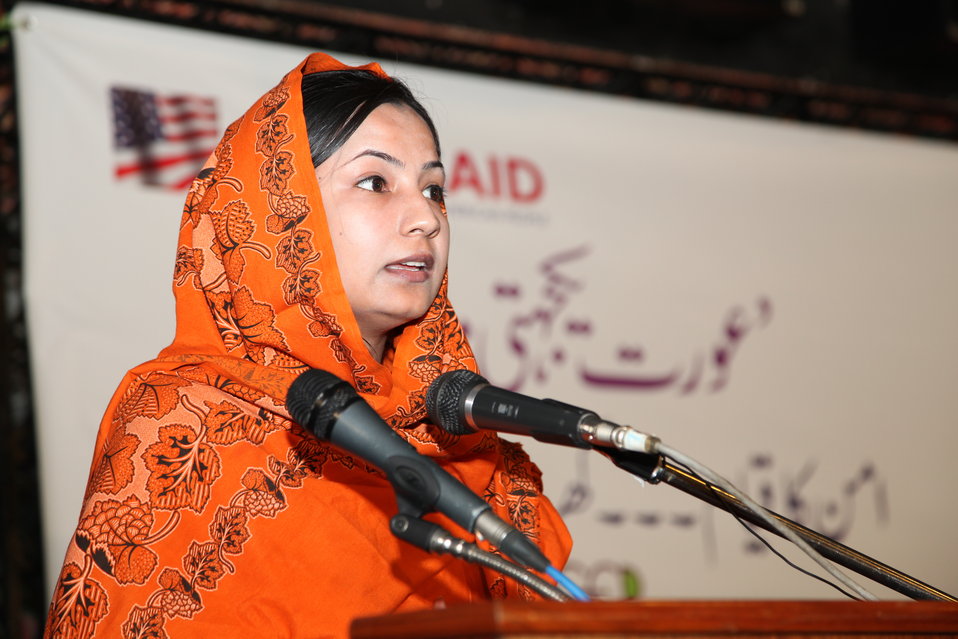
A beneficiary of GENDER EQUITY PROGRAM from District Mianwali

GENDER EQUITY PROGRAM